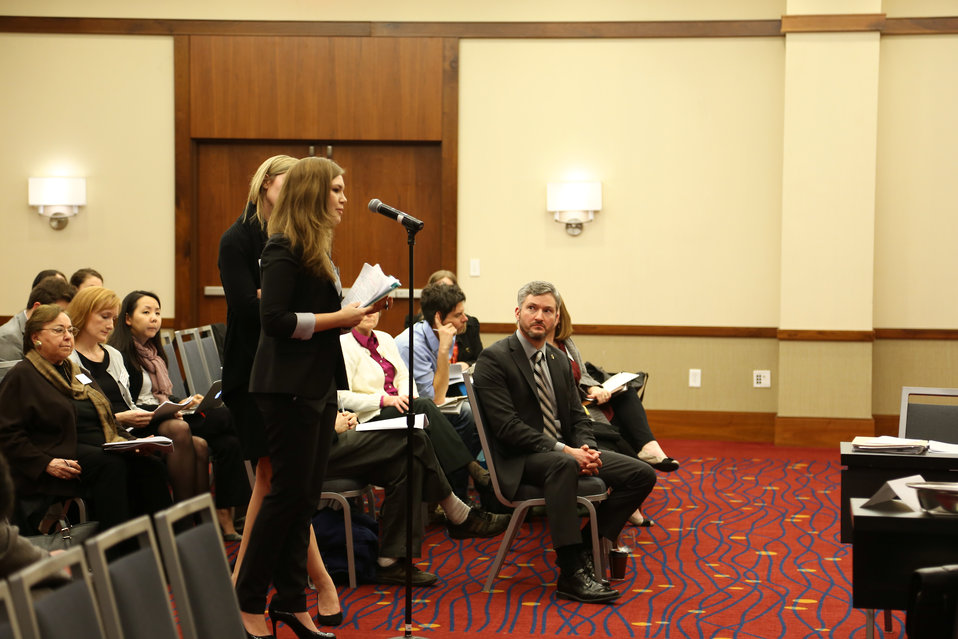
Wildlife Trafficking Advisory Council Meeting March 20, 2014